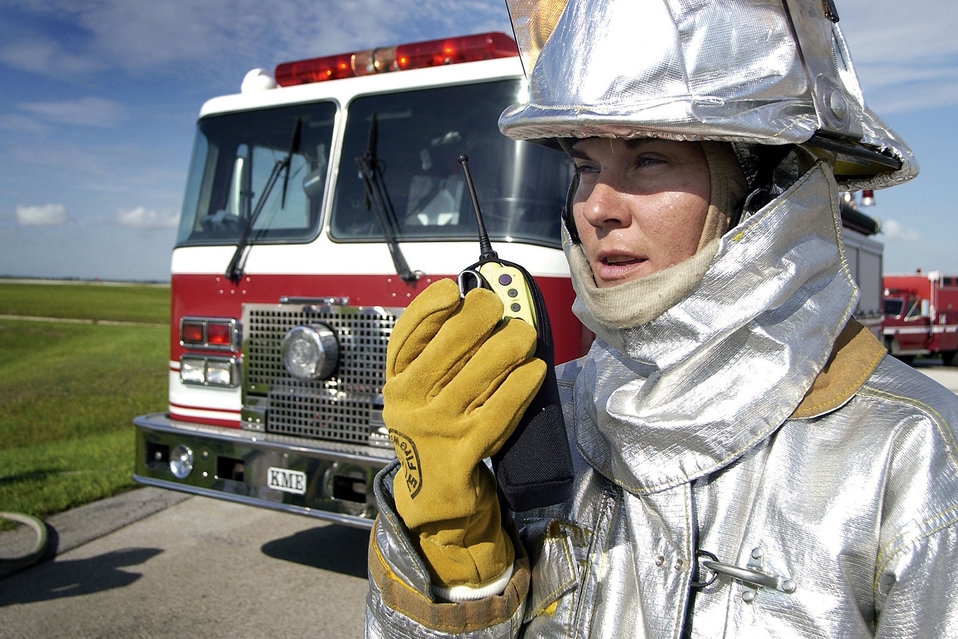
Blundell

PATRICK AIR FORCE BASE, Fla. -- Staff Sgt. Suzanne Blundell, a 45th Civil Engineer Squadron firefighter, radios in to other firefighters during a training exercise. Blundell is the only female firefighter at the base fire station.